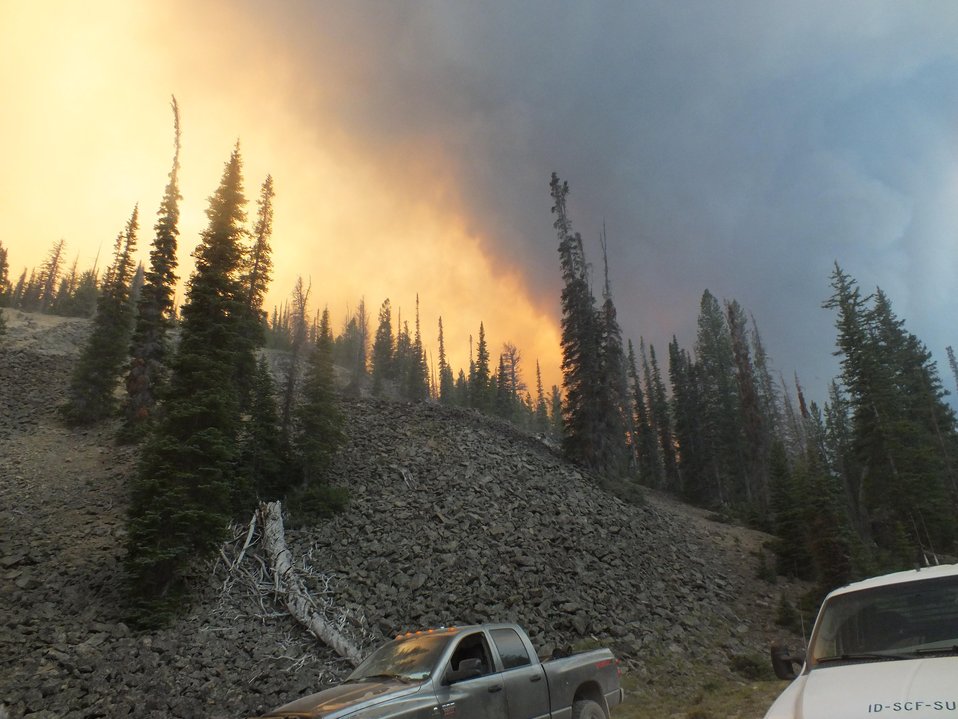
The Lodgepole Fire in the Salmon-Challis National Forest near Challis, ID began on Jul. 20, 2013 by lightning has consumed approximately 20,325 acres and is approximately 40% contained.